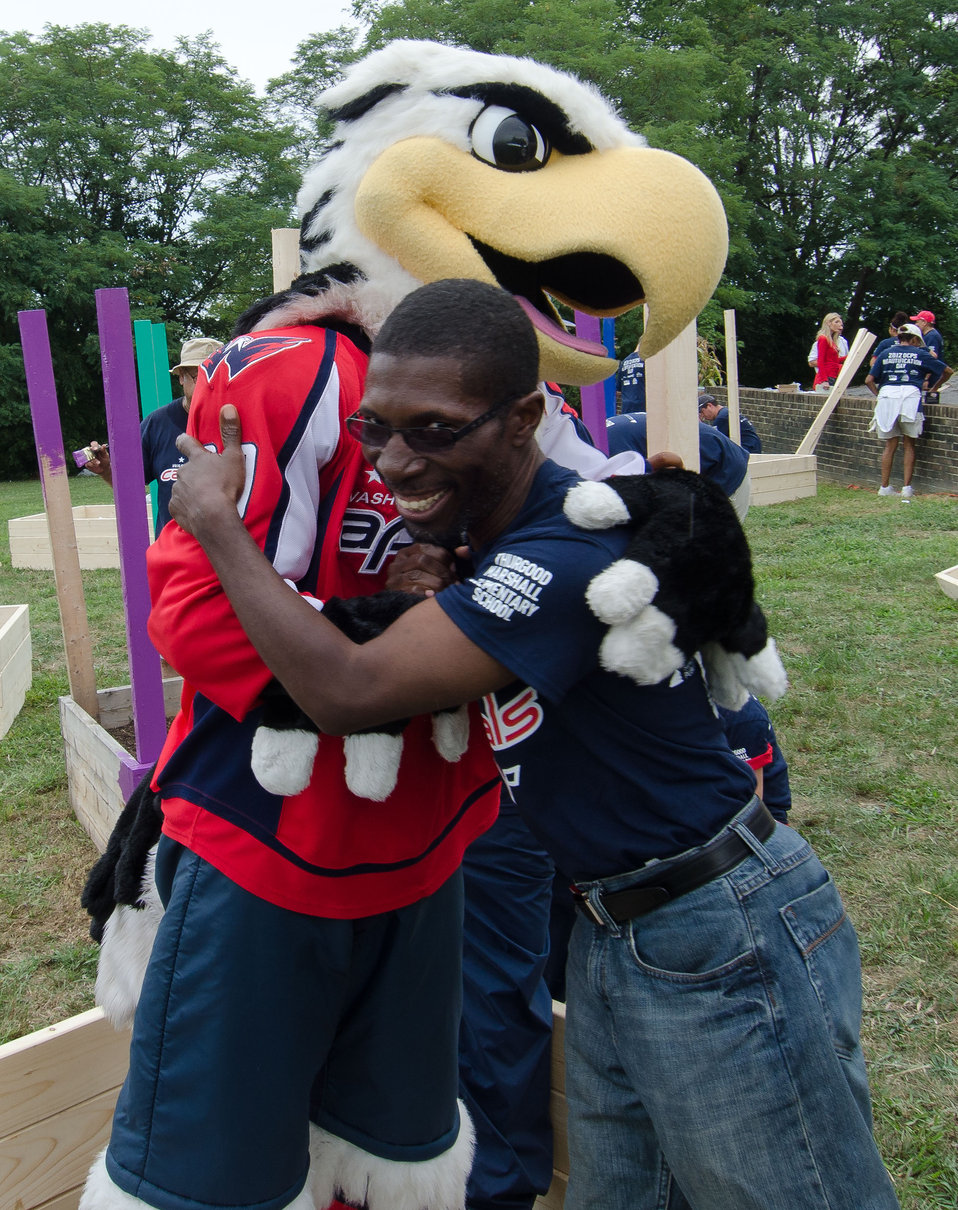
Principal Rembert Seaward and Washington Capitals' hockey mascot Slapshot give each other a hug after compare arms-to-wings to see who has more muscles, when U.S. Department of Agriculture (USDA) People’s Garden Executive Master Gardeners, friends, and family, along with Washington Capitals fans volunteer in District of Columbia Public Schools’ (DCPS) Beautification Day, on Saturday, August 25, 2012, at Thurgood Marshall Elementary School, in Washington, D.C. Each year people are invited to help “spruce up” public school facilities in preparation for the first day of school. More the 70 volunteers pitched in at this large school facility. The People’s Garden effort involves building and painting raised planter boxes, then preparing the soil mixture so they are “ready to grow.” Additionally, a team that includes descendants of U.S. Supreme Court Justice Thurgood Marshall assembles a prefabricated garden toolshed. The Justice’s son, John Marshall leads the team, which includes Brianna the Justice’s great-grand daughter in one of many multi-generational efforts at this school today. Washington Capitals Forward Mike Riberio, his family and mascot Slapshot participated in every project underway at Marshall School. From the outside gardens, to inside murals, and robotics worktable construction, the teams made their goals.